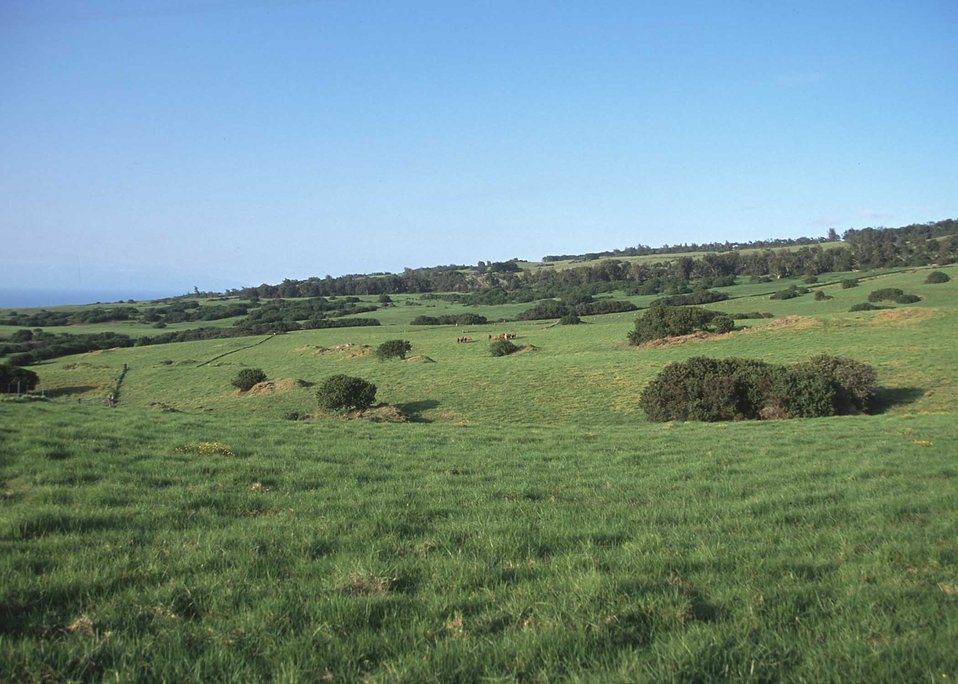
Pasture or rangeland in Hawaii.